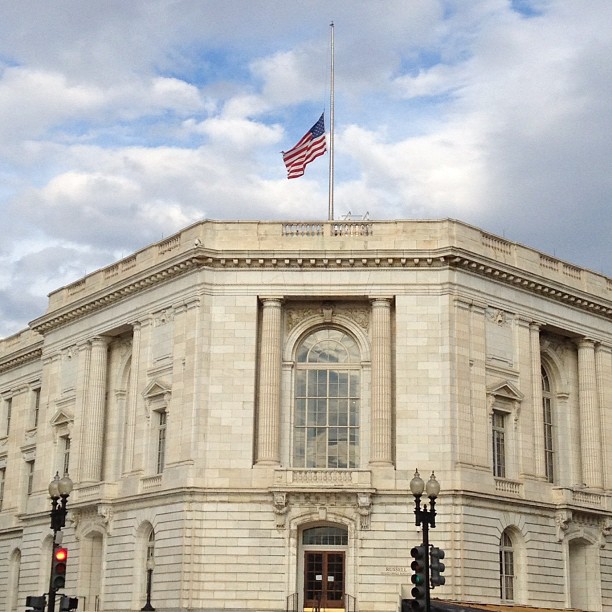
Flag at half-staff over Senate Russell bldg. Remembering Sen. Arlen #Specter.